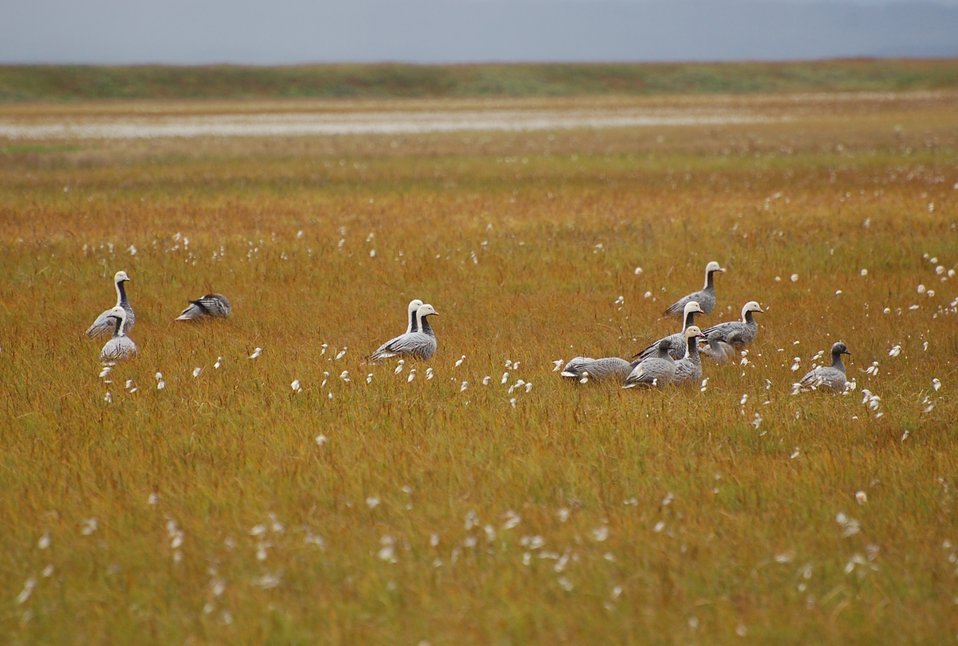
Emperor Geese

Izembek National Wildlife Refuge